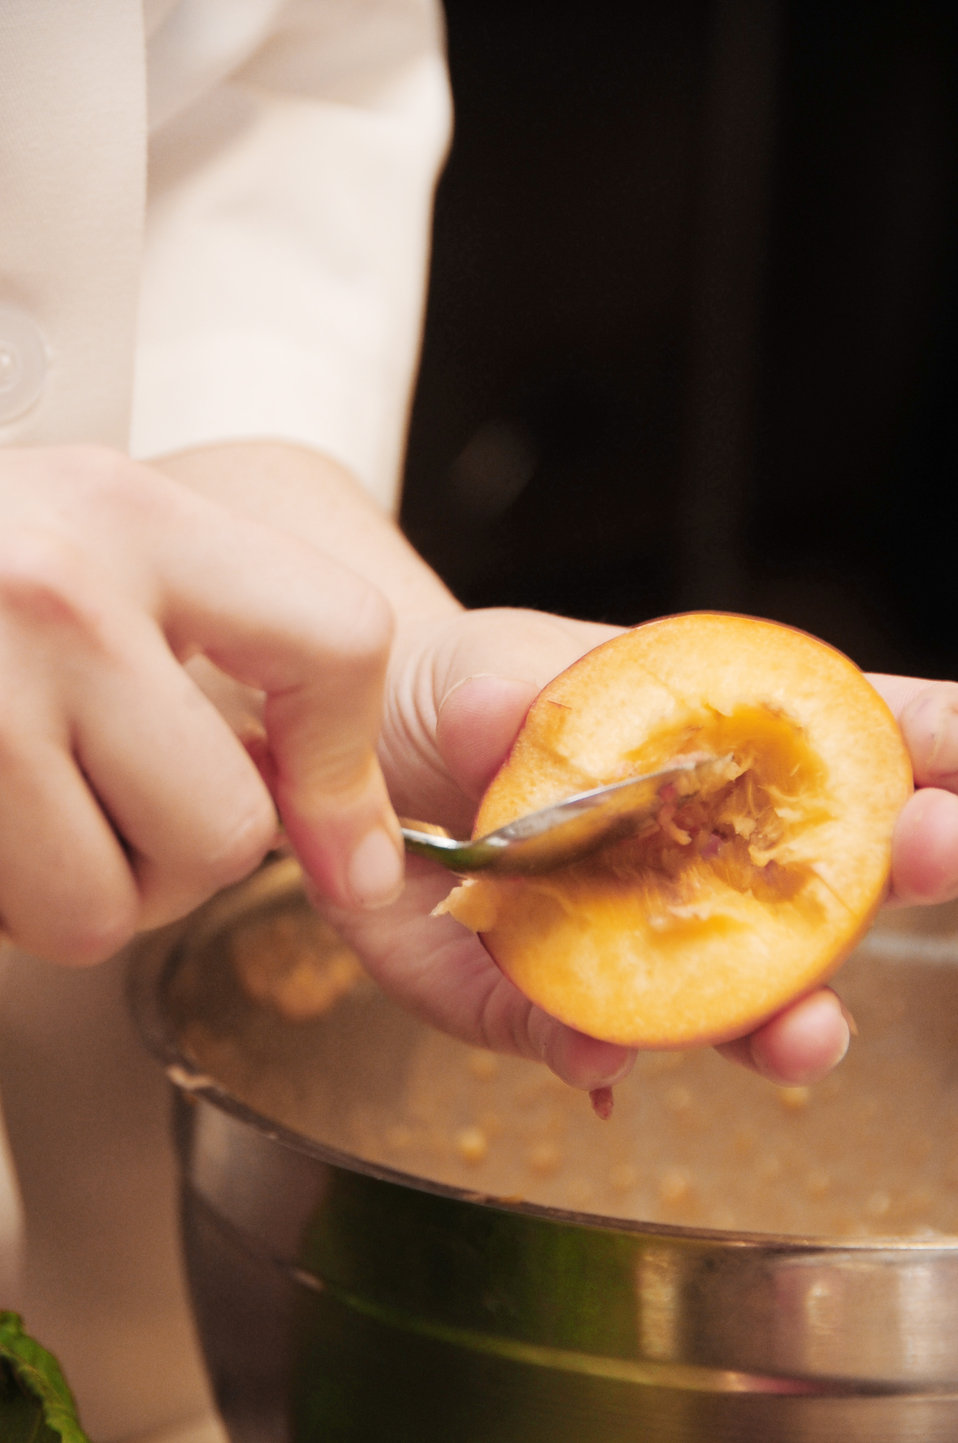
Ellsworth Airmen participate in cooking competition

Airman 1st Class Tiffany Lamb scoops the seeds out of an apricot during the